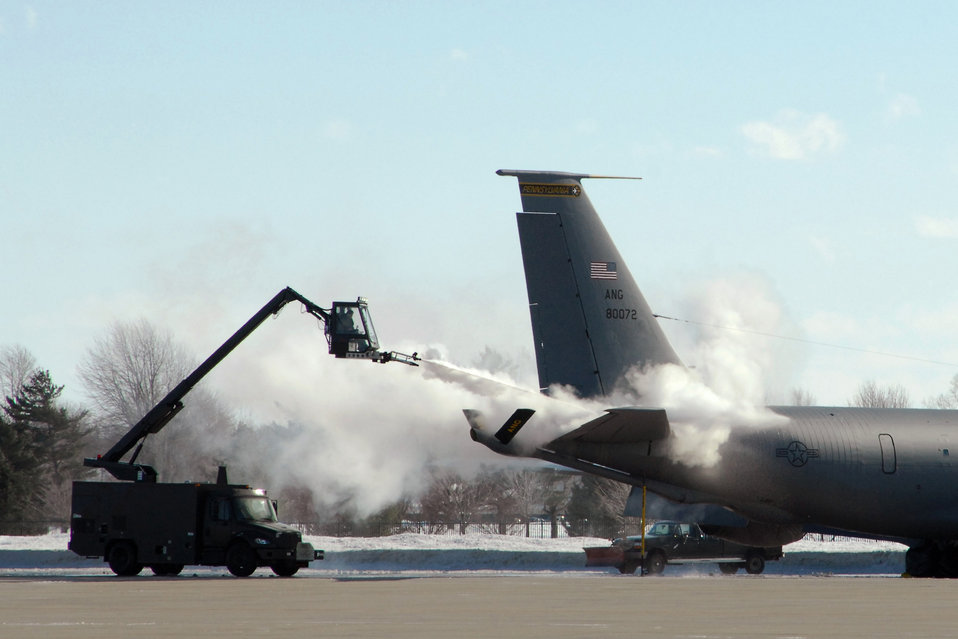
Wingman of another kind

Members of the Michigan Air National Guard's 191st Maintenance Squadron apply a de-icing agent to a KC-135 Stratotanker Feb. 8, 2011, at Selfridge Air National Guard Base, Mich.